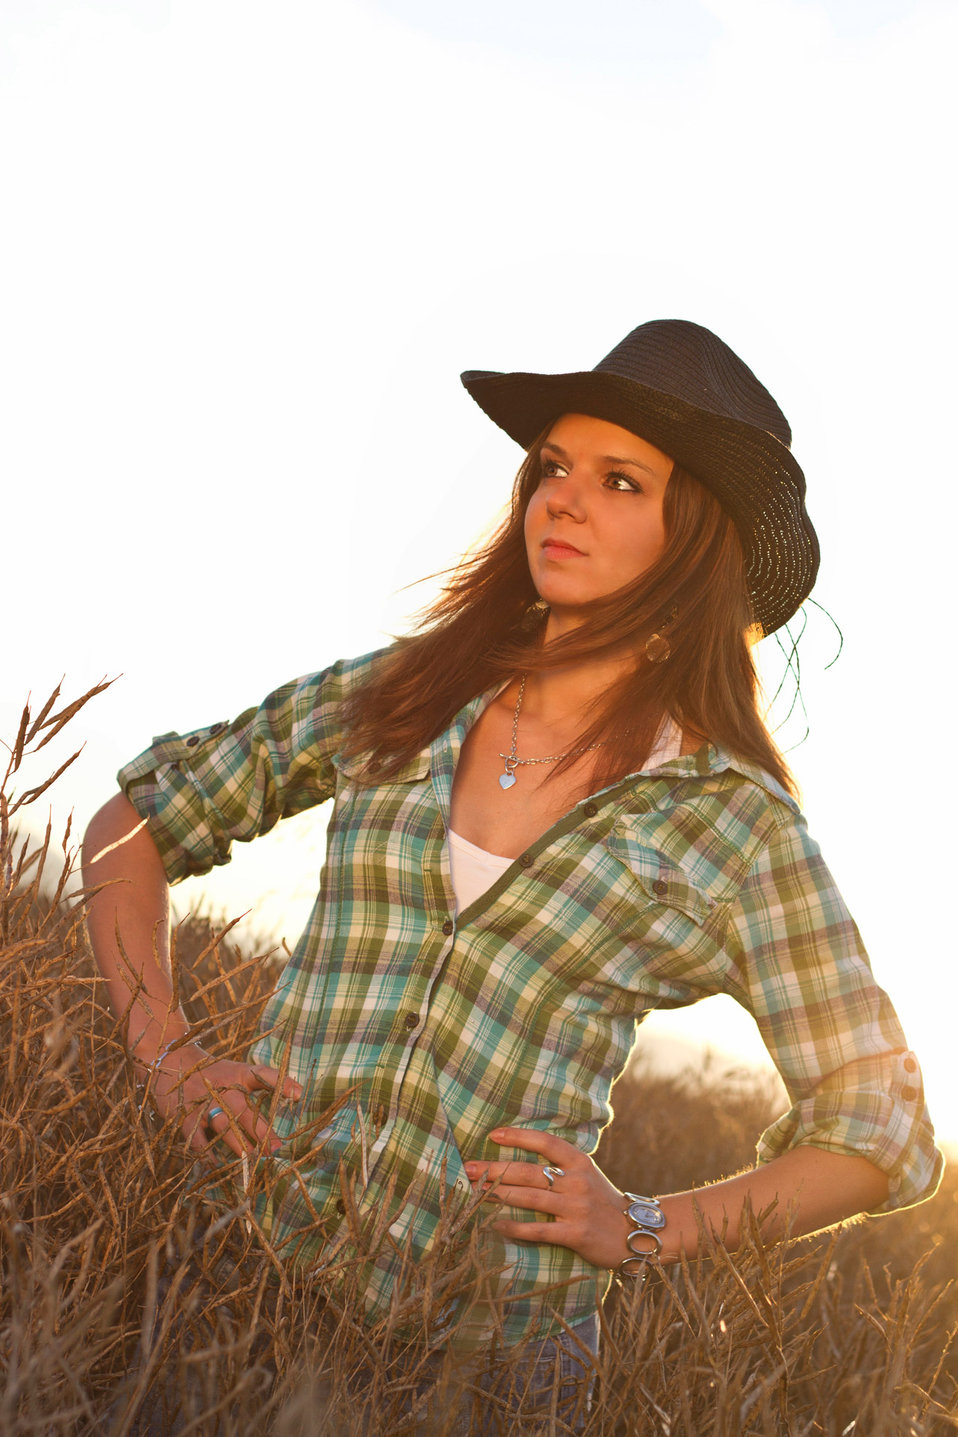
Cowboy girl.